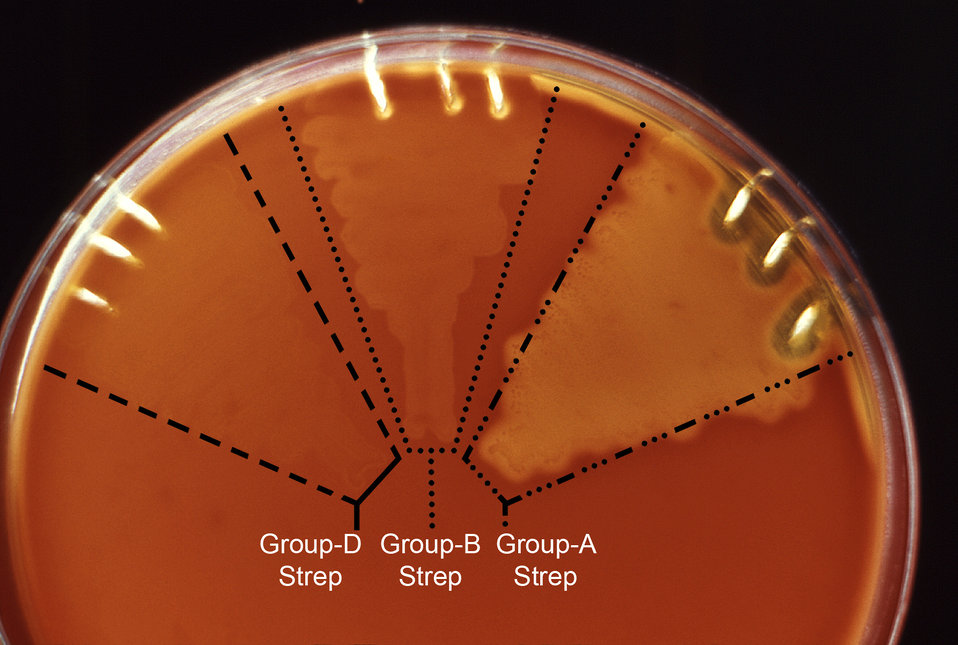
This image depicts the quantitative difference in hemolytic reactivity seen in a trypticase soy agar culture plate containing 5% sheep's blood growing group-D Streptococci (left wedge), group-B Streptococci (middle wedge), and group-A Streptococci (right wedge) bacteria. This plate was grown under normal atmospheric conditions, at 35oC, for a periof of 18hrs. See PHIL 10862 for a magnified view of this culture plate, at approximately 10X.